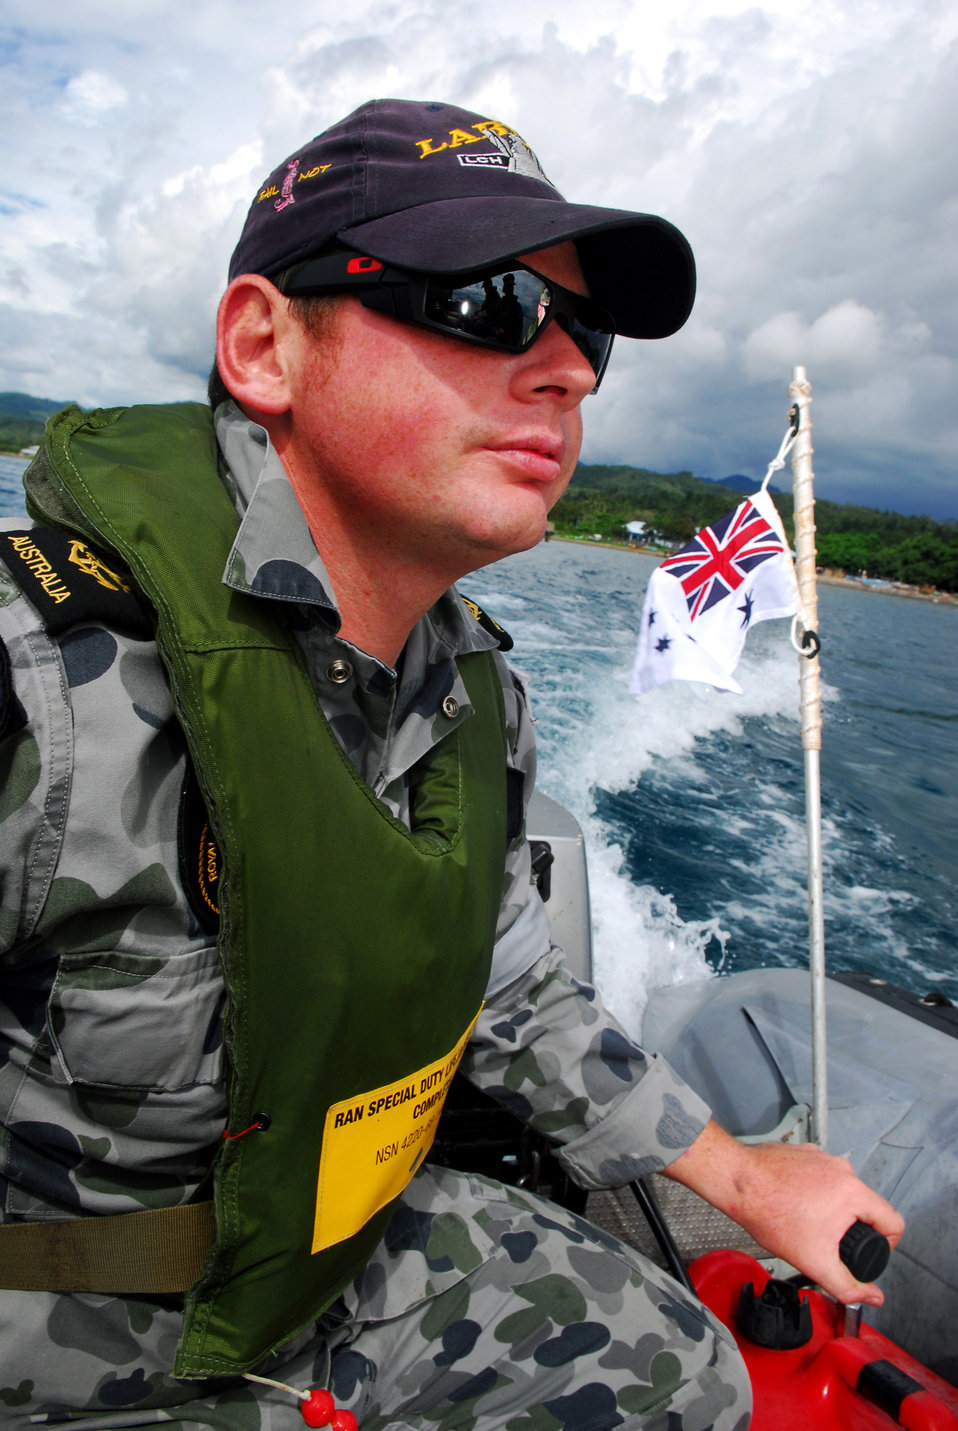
Australian Royal Navy Leading Seaman Nathan Byast drives a Rigid Hull Inflatable Boat, with passengers from The Military Sealift Command hospital ship USNS Mercy (T-AH 19) for a visit to Her Majesty Australian Ship (HMAS) Labuan (L128) in Sofifi, Indonesia, on July 20, 2010. Mercy is in the North Maluku Islands conducting Pacific Partnership 2010, the fifth in a series of annual U.S. Pacific Fleet endeavors conducted in Indonesia as a disaster relief exercise aimed at strengthening regional partnerships.